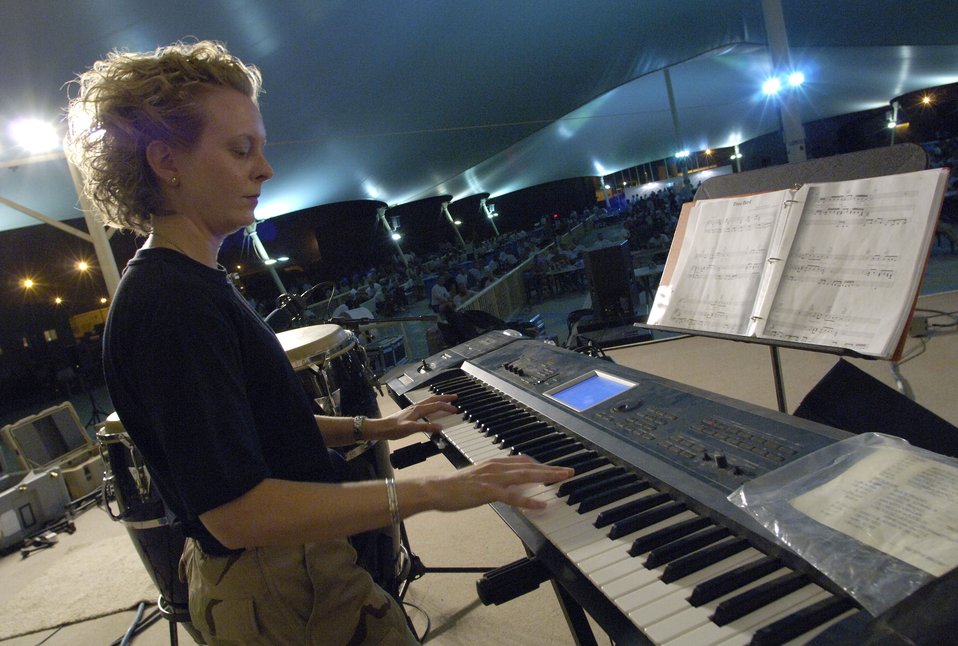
Expeditionary band performs for troops in Southwest Asia

Staff Sgt. Amy Layhew of the U.S. Central Air Forces Expeditionary Band